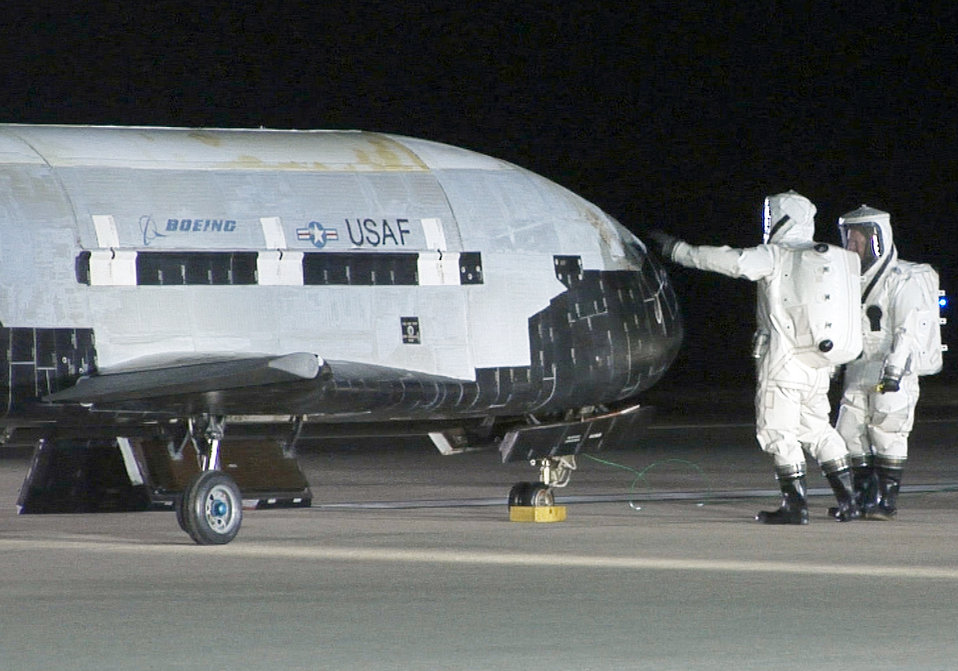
X-37B Orbital Test Vehicle 1

Technicians in self-contained atmospheric protective ensemble suits conduct initial checks on the X-37B Orbital Test Vehicle 1 after its landing Dec. 3, 2010, at Vandenberg Air Force Base, Calif. The X-37B conducted on-orbit experiments for more than 220 days during its maiden voyage.